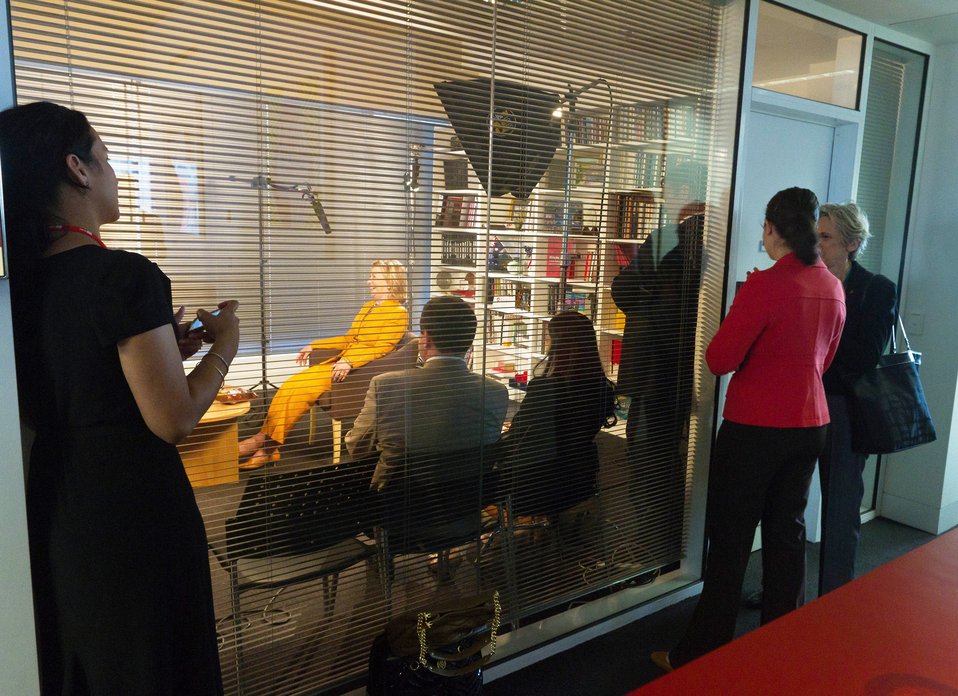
Behind the Scenes: Secretary Clinton With Andy and Hamish

U.S. Secretary of State Hillary Rodham Clinton is interviewed by Hamish Blake and Andy Lee in Melbourne, Australia, on November 7, 2010.